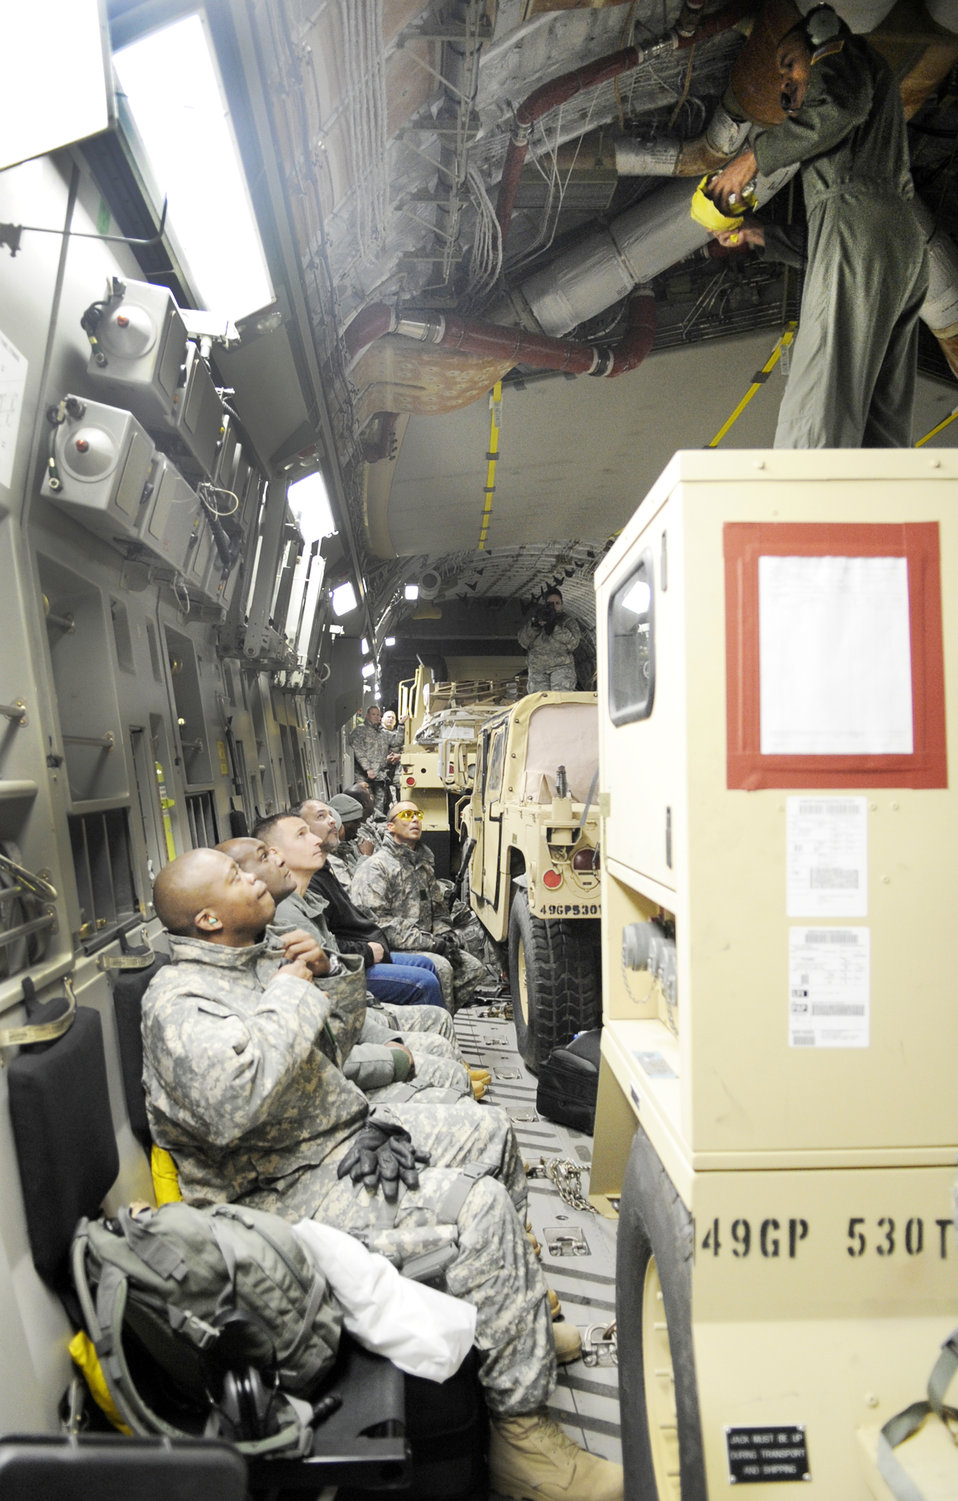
Airmen, Soldiers continue delivering troops, aid to Haiti

Servicemembers from Fort Lee, Va. sit aboard a C-17 Globemaster III Feb. 8, 2010, at Langley Air Force Base, Va. Through a joint effort by Soldiers and Airmen from Joint Base Langley-Eustis, servicemembers and cargo are transported to Haiti as part of Operation Unified Response.